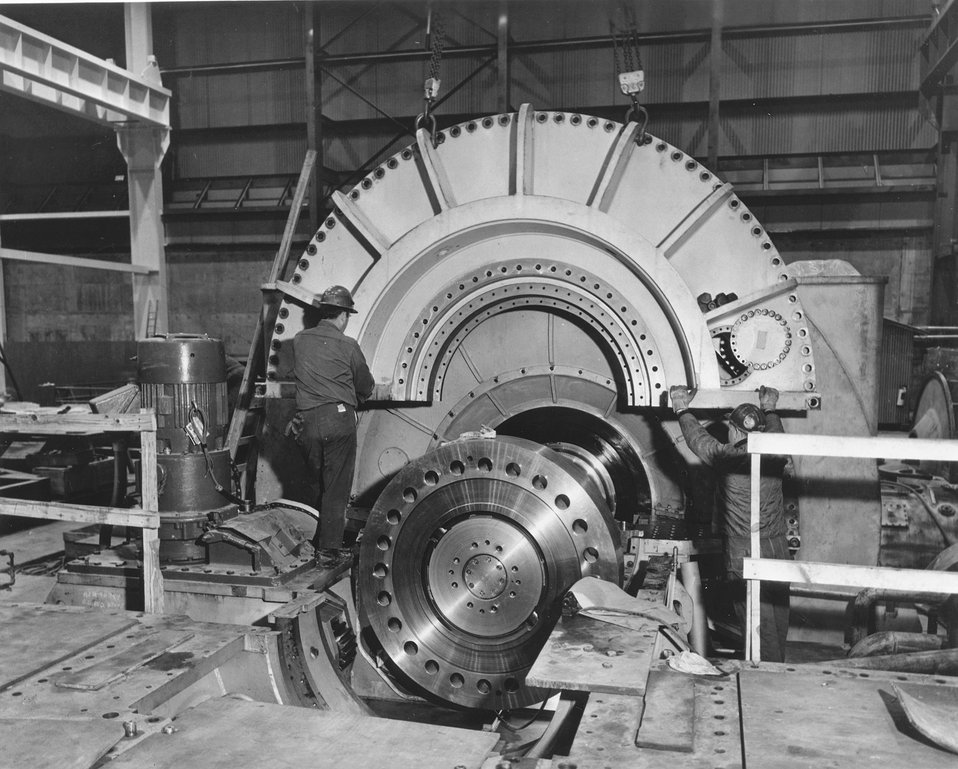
Browns Ferry Nuclear Plant...Workers set the outer end shield of the TVA Browns Ferry Nuclear Plant Unit 2 generator. c. 1973